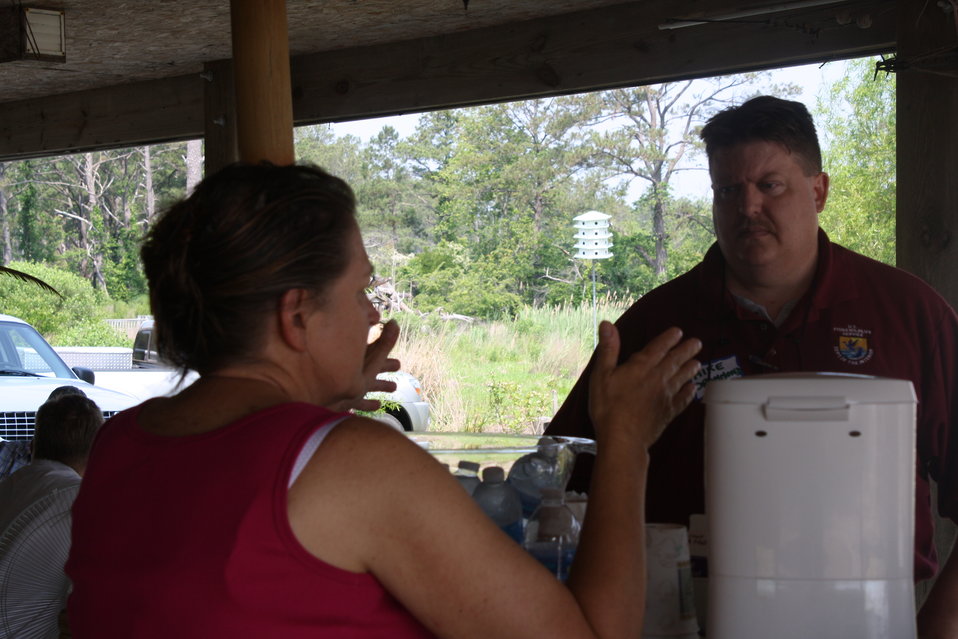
Bavon Beach project

Mike Drummond, also with the U.S. Fish and Wildlife Service, has worked to secure the project and needed funding to proceed with building the offshore breakwater system.